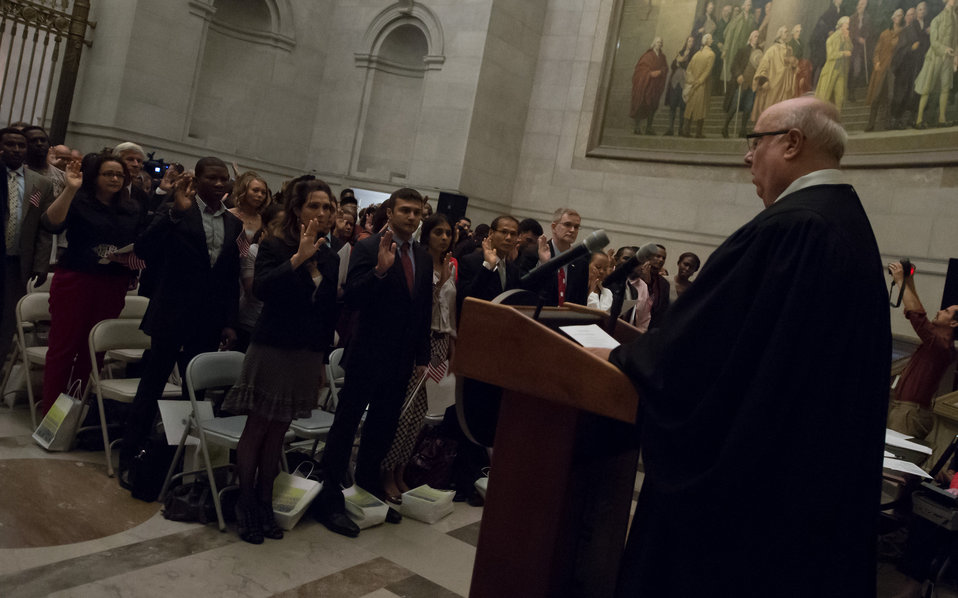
Constitution Day Naturalization Ceremony

The Honorable Royce Lamberth administers the oath of citizenship.